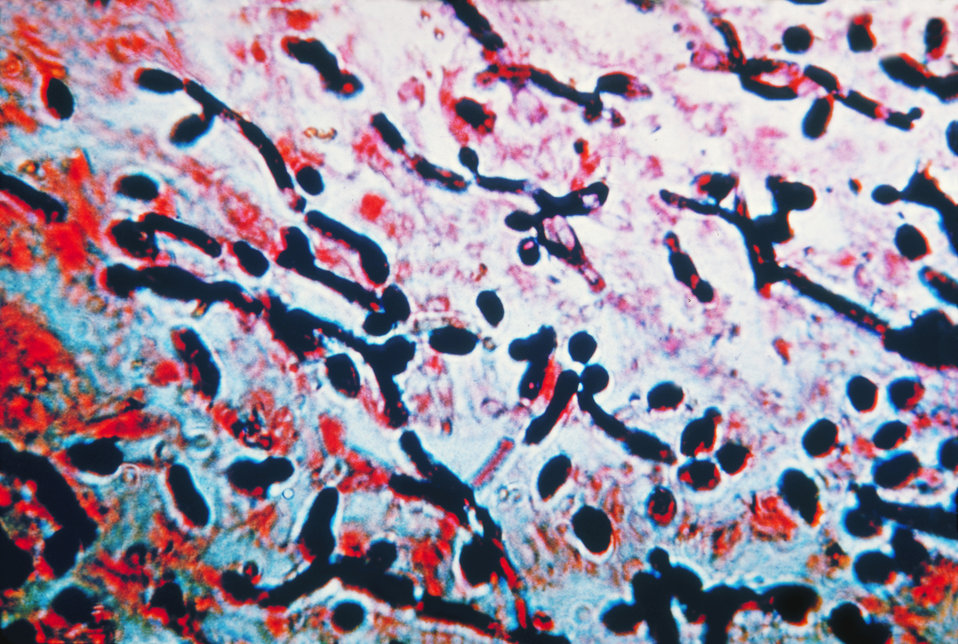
This photomicrograph of the esophagus shows a mucosal infection, Candidiasis, caused by Candida sp..